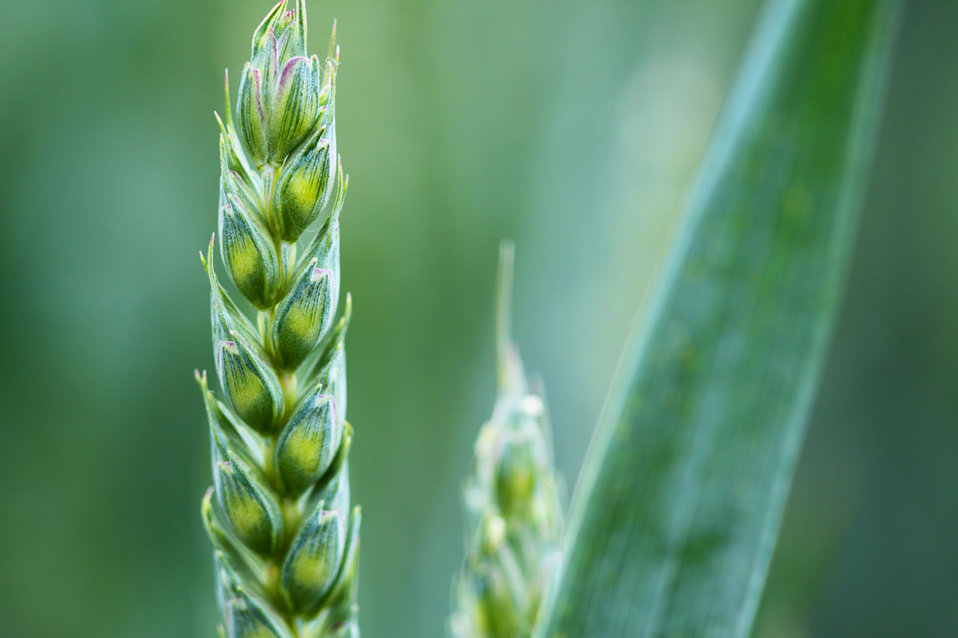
Green wheat closeup pictures.